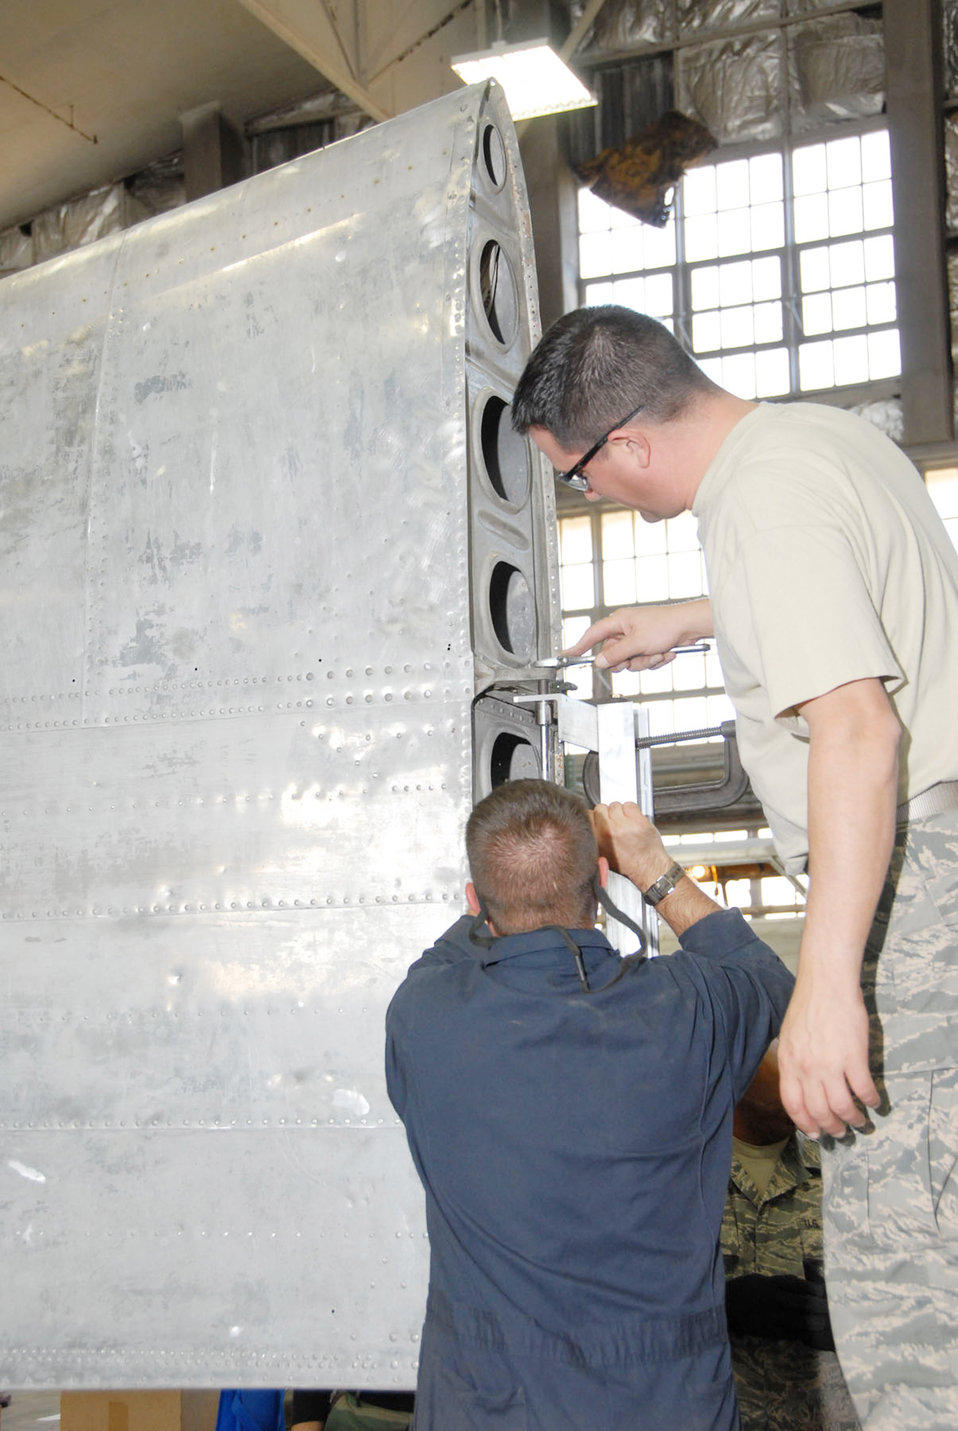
Museum restoration

Reservists with the 315th Maintenance Squadron from Charleston Air Force Base, S.C., piece together a holding fixture for the B-17 Memphis Belle's wing during their two-week stay at Wright-Patterson Air Force Base, Ohio, where the group worked in the restoration hangar at the National Museum of the U.S. Air Force in nearby Dayton.